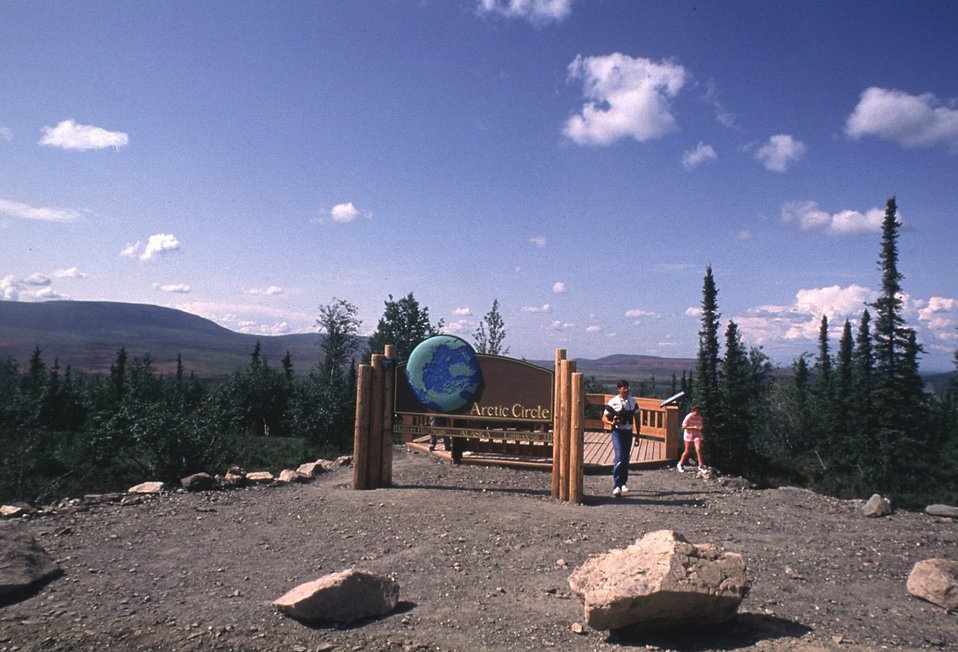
Arctic Circle Wayside, Dalton Highway